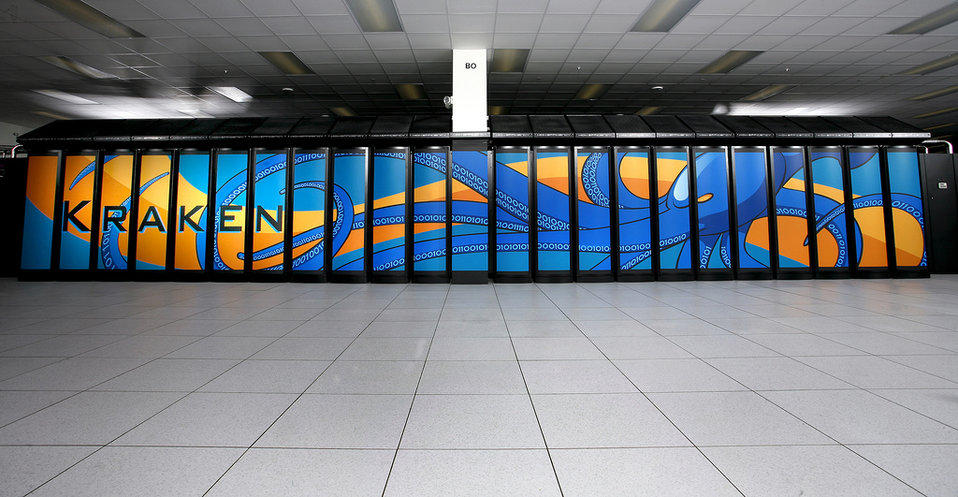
The 607-teraflop Cray XT KRAKEN, managed by the University of Tennessee and funded by the National Science Foundation, is the world's fastest academic supercomputer.